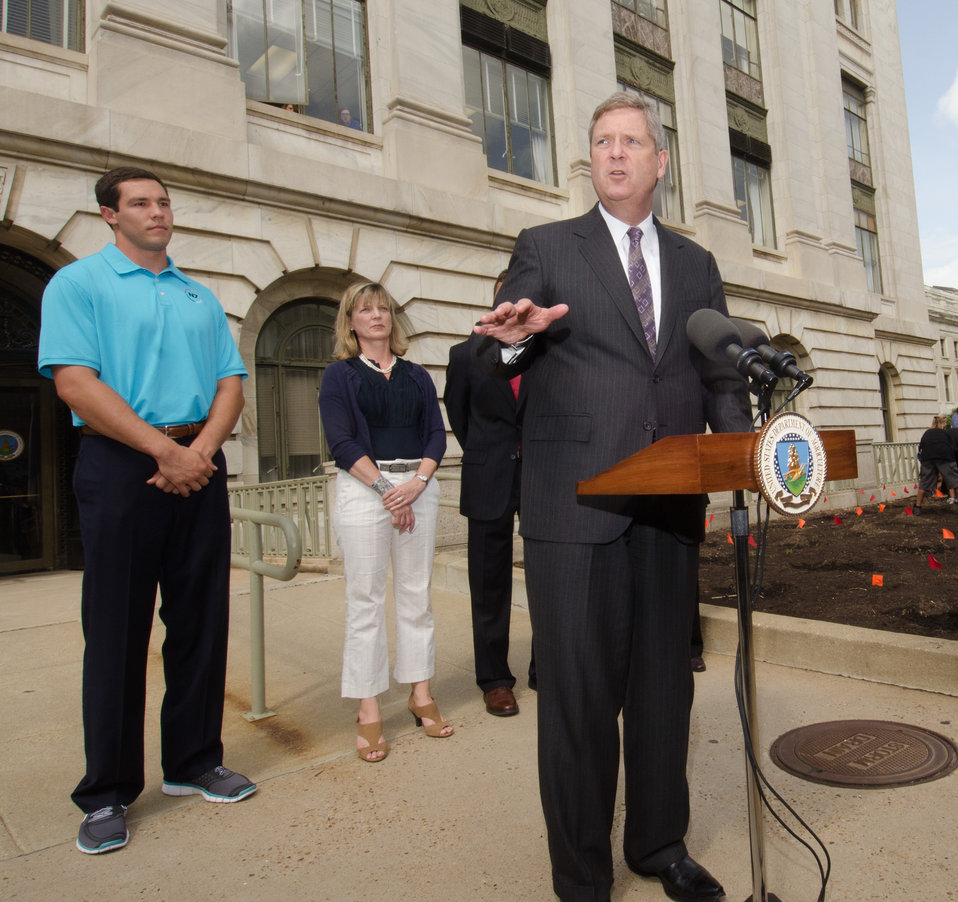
Agriculture Secretary Tom Vilsack (at podium) and St. Louis Rams Quarterback Sam Bradford (blue shirt, left) met at the U.S. Department of Agriculture in Washington, DC, on Wednesday, April 27, 2011, to encourage Native American Youth to pursue a healthy lifestyle. More than 30 Students from Eastern and Western Tribes, Southeast Alaska, and Tuba City, Arizona came to the Nation’s Capitol to plant vegetable seeds that are indigenous to North America. Bradford is a citizen of the Cherokee Nation. The garden is called The Roots of American Agriculture, and is part of the Headquarters’ People’s Garden. Also speaking at the event was the Executive Director of First Lady Michelle Obama’s Let’s Move! Campaign Robin Schepper (center); Director of the Bureau of Indian Education.